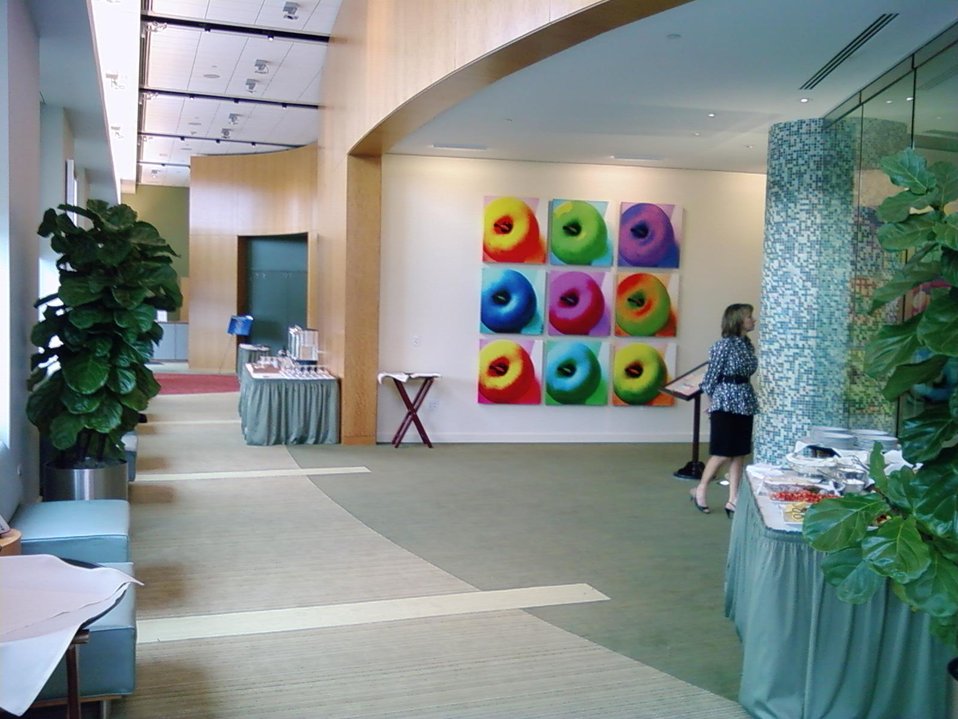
SC event 12

Broadband Field Hearing, in Charleston, South Carolina. 10-06-09